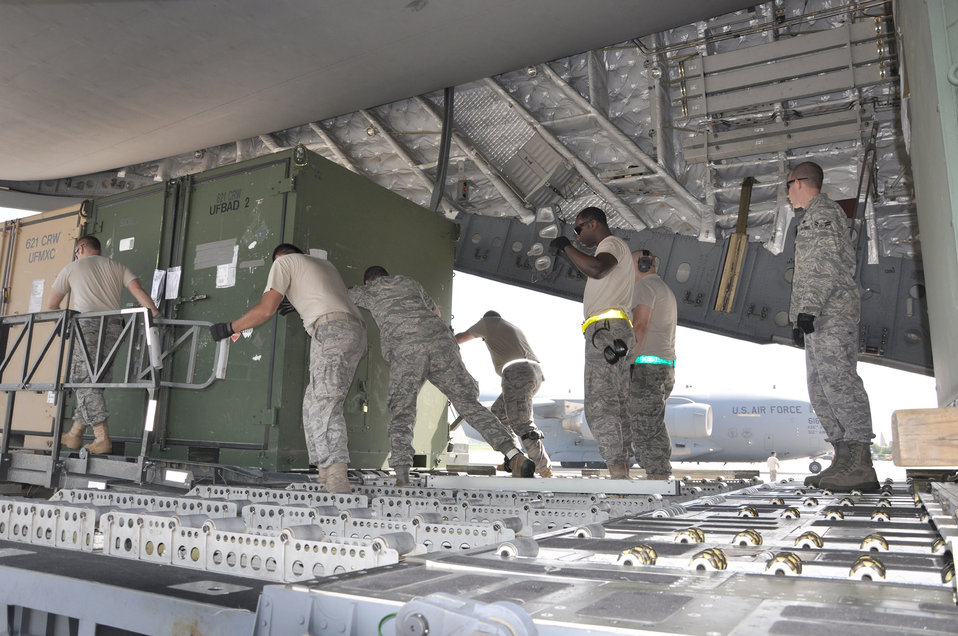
Pakistan flood relief

Airmen unload 621st Contingency Response Element equipment and supplies from a C-17 Globemaster III cargo aircraft Aug. 28, 2010, at Pakistan Air Force Base Chaklala, Pakistan. Approximately 40 Airmen from the 621st Contingency Response Wing arrived in Pakistan Aug. 28, 2010, to support Pakistan's flood relief operations. The Airmen will work in partnership with Pakistan government and military officials to support humanitarian airlift operations delivering relief supplies to required locations throughout Pakistan.